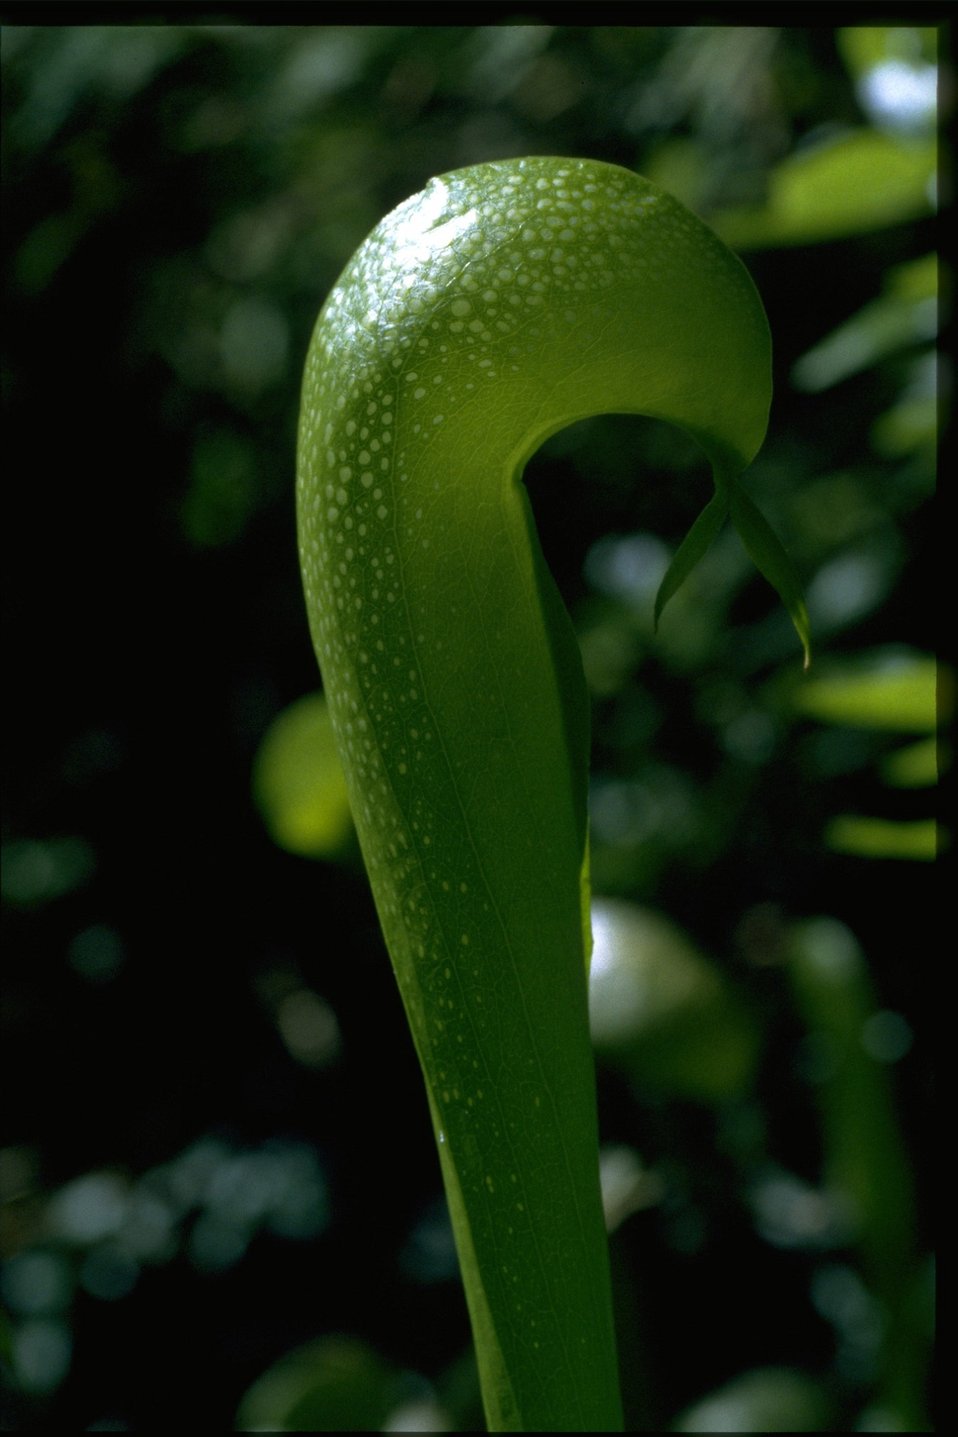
Closeup shot of Cobra Lily, Darlingtonia californica.